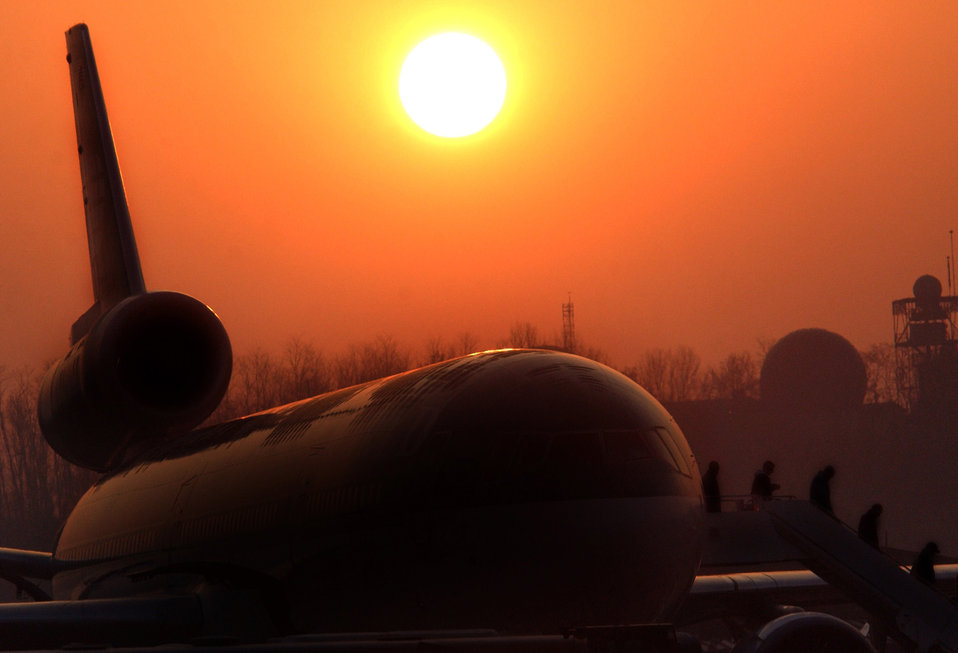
Onward Movement

OSAN AIR BASE, South Korea -- The sun sets March 19 on participants in exercise Reception Staging Onward Movement and Intergration as they get off a jet here. The annual exercise tests the ability of the U.S. and South Korean militaries to receive forces, process them and move them into position to defend South Korea.